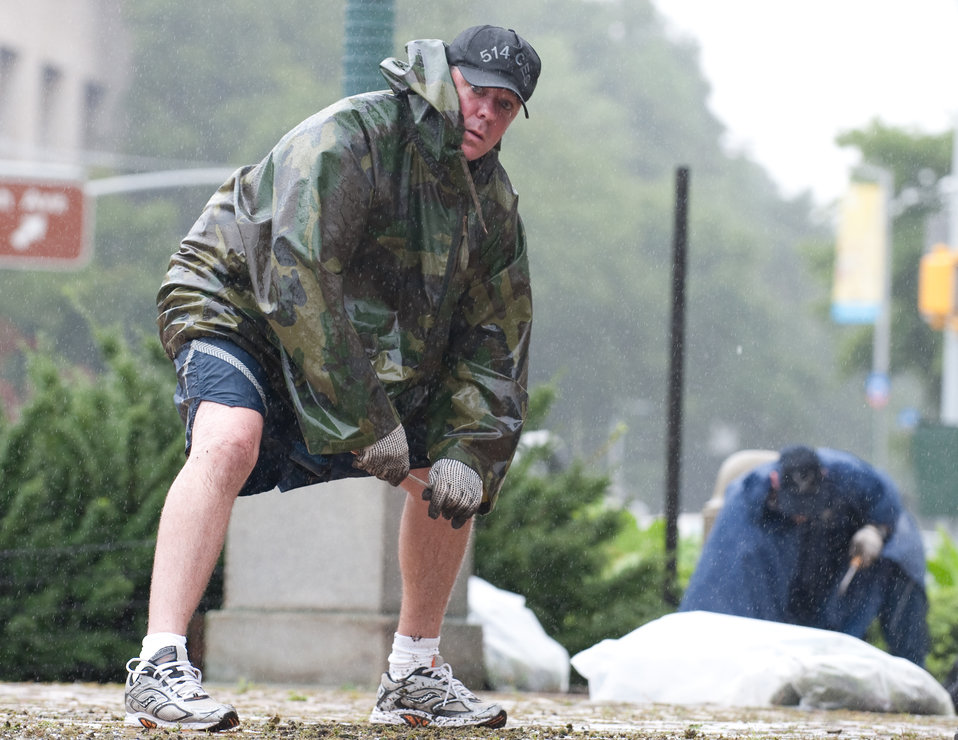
Air Force Week - Volunteer Day

Staff Sgt. Edward Blunnie looks up at the remaining weeds that he and many of the other 33 Airmen will be removing from between brickwork during the cleanup of the Grand Army Plaza in Prospect Park, as part of Air Force Week New York's Volunteer Day Aug. 25, 2010, in Brooklyn, N.Y. Sergeant Blunnie is a pest management craftsman with the 514th Civil Engineering Squadron at Joint Base McGuire-Dix-Lakehurst, N.J.